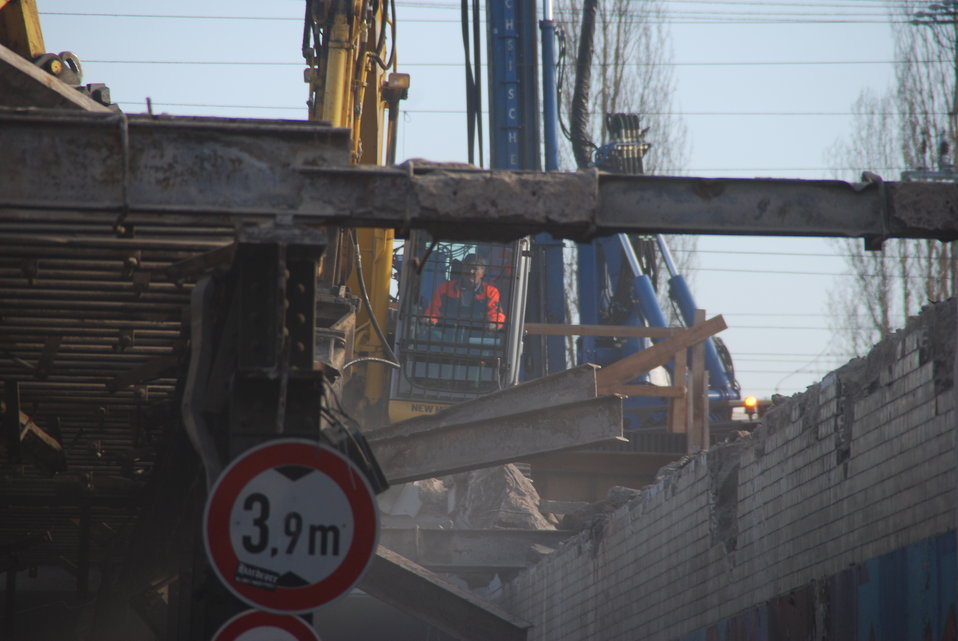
Abriss Bahnhofstunnel Frankfurt (Oder)